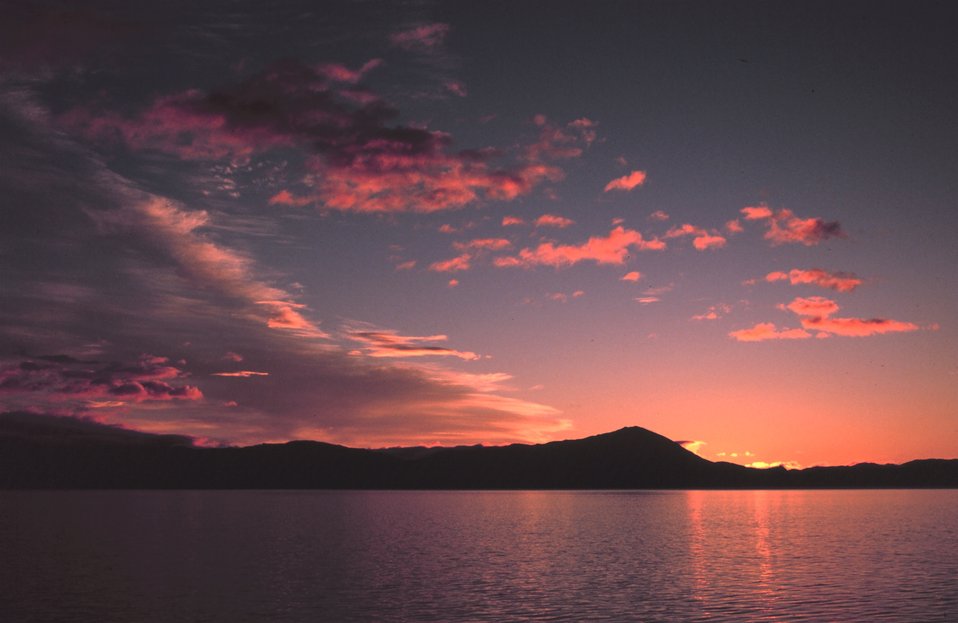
Sunrise in Southeast Alaska